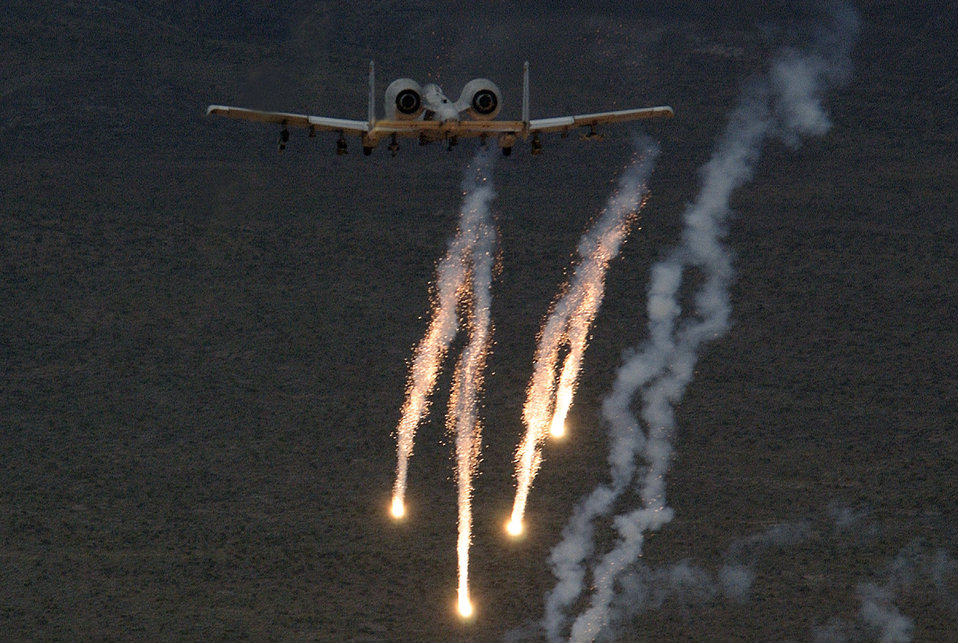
Bolting through the sky

NELLIS AIR FORCE BASE, Nev. -- An A-10 Thunderbolt II releases chaff and flares during a close-air support mission May 5. A-10s are specially designed for close-air support of ground forces. They are simple, effective and survivable twin-engine jet aircraft that can be used against ground targets, including tanks and other armored vehicles. This aircraft is assigned to the 66th Weapons Squadron here.